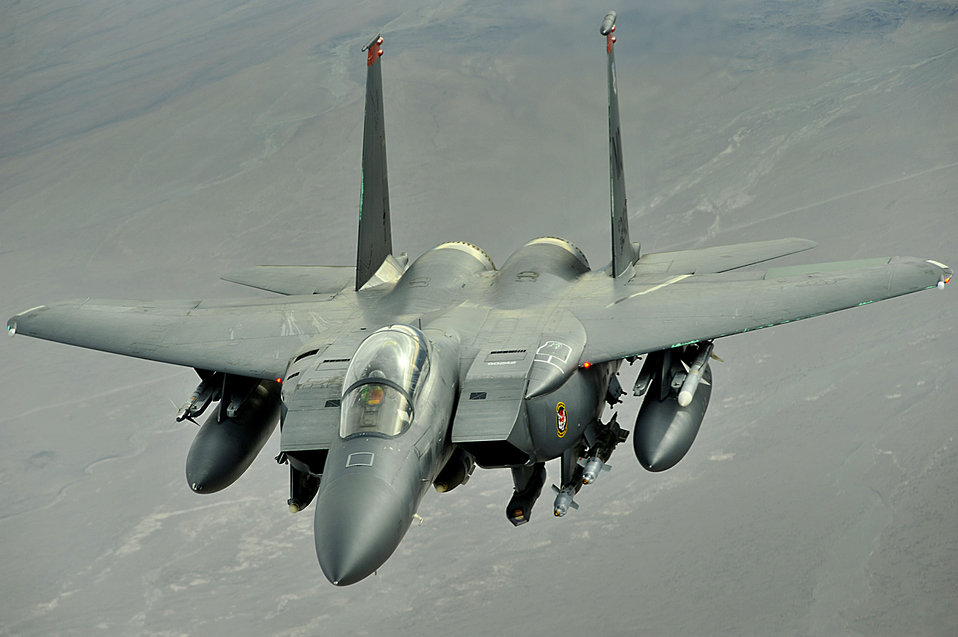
Controlling the sky

An F-15E Strike eagle conducts a mission over Afghanistan on Nov. 7. The F-15E Strike Eagle is a dual-role fighter designed to perform air-to-air and air-to-ground missions. An array of avionics and electronics systems gives the F-15E the capability to fight at low altitude, day or night, and in all weather.